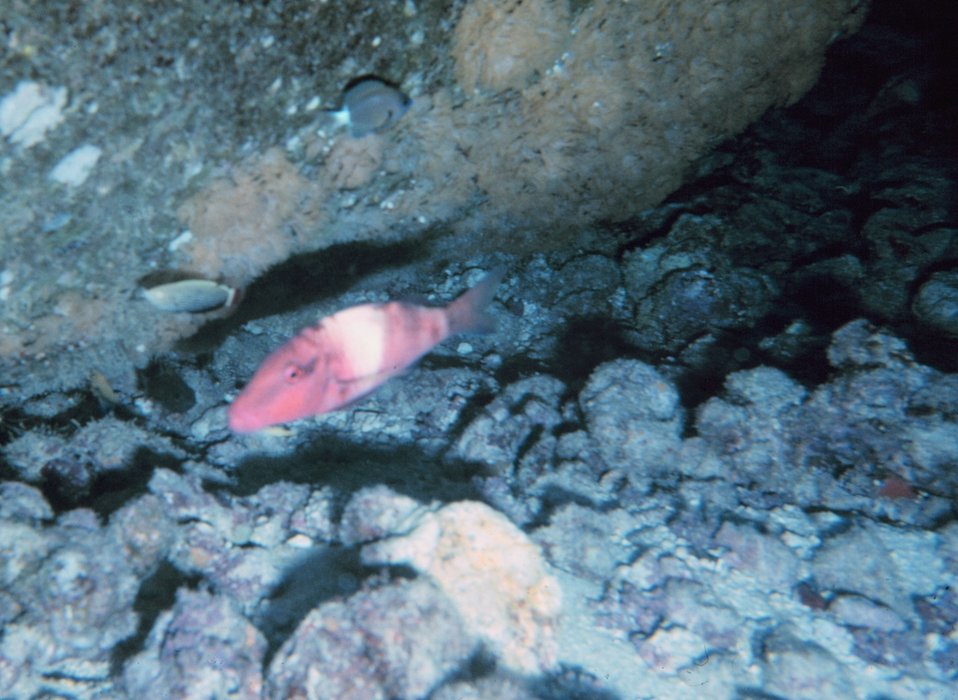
Parupeneus multifasciatus - a red goatfish. Orange bryozoan colonizing underside of pipe.